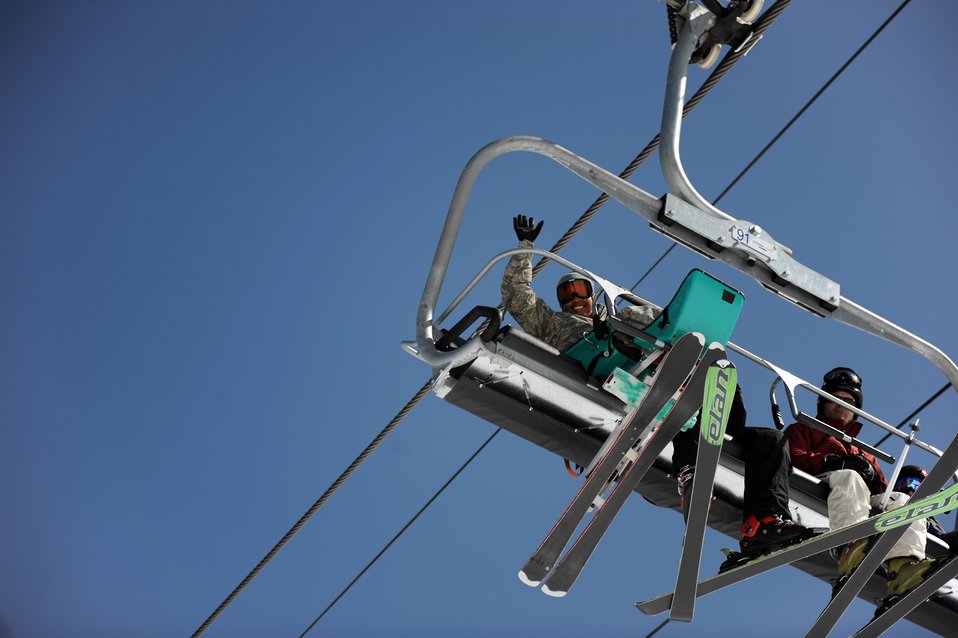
The power of the human spirit

Staff Sgt. Mareshah Haynes waves from the ski lift as she experiences how it feels to ski in a mono-ski March 28, 2010, outside the Silvertree Hotel in Snowmass Village, Colo. Sergeant Haynes is a print journalist assigned to the Defense Media Activity-San Antonio. Mr. Desrosiers is a ski instructor of 23 years covering the 24th National Disabled American Veterans Winter Sports Clinic. The event is sponsored by the Department of Veterans Affairs and Disabled American Veterans.